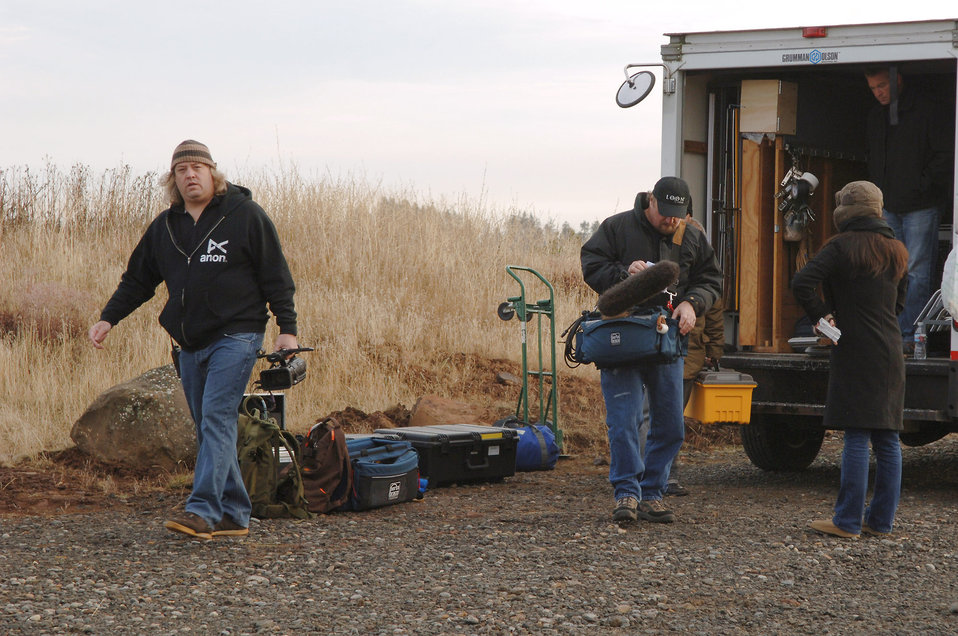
MTV visits Fairchild Air Force Base

An MTV film crew arrives at Fairchild Air Force Base, Wash., Nov. 17 to film an episode of the